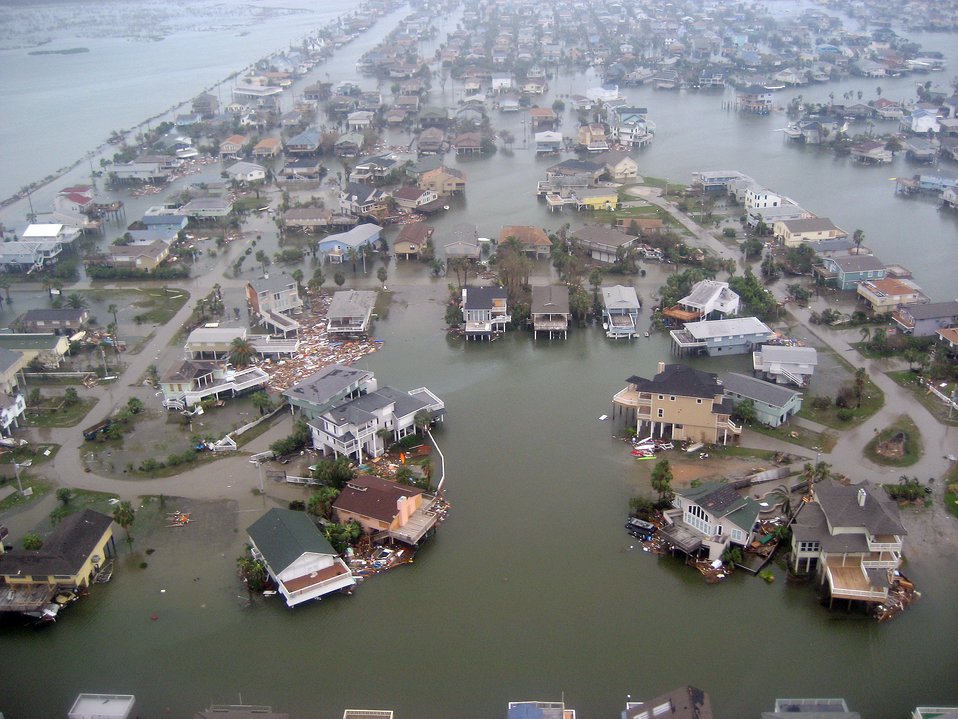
Eye in the sky

A view of Galveston, Texas, from Dragonslayer 611, a SH-60F Sea Hawk helicopter, piloted by Cmdr. Mal Sandie (commanding officer HS-11) and Lt. Cmdr. Tim Kinsella survey the Biloxi, Miss., coastline looking for damaged areas caused by Hurricane Ike Sept. 13. The helicopters are from the Helicopter Anti-Submarine Squadron 11, Naval Air Station Jacksonville, Fla.